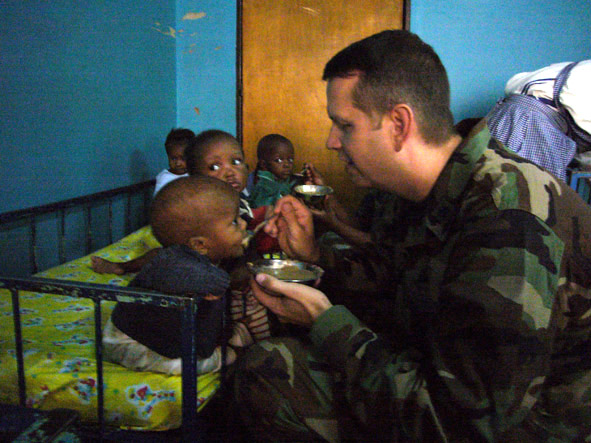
Ramstein Airmen connect with Rwandan children

Lt. Col. Jeffrey Renner feeds a Rwandan orphan during a visit in Kigali by Airmen from Ramstein Air Base, Germany. The Airmen delivered school supplies, clothing and blankets donated by the Kaiserslautern Military Community. Colonel Renner is commander of the 787th Air Expeditionary Squadron.